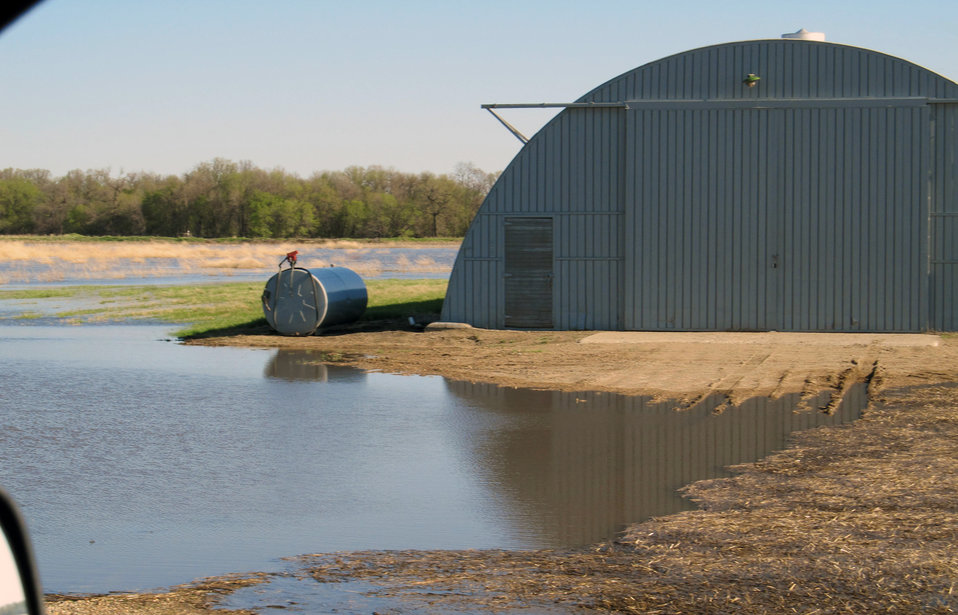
Flooding and water damage in the Park and Tongue River Watersheds located in Cavalier, Pembina and Cavalaier Counties in ND on Thursday, May 23, 2013.